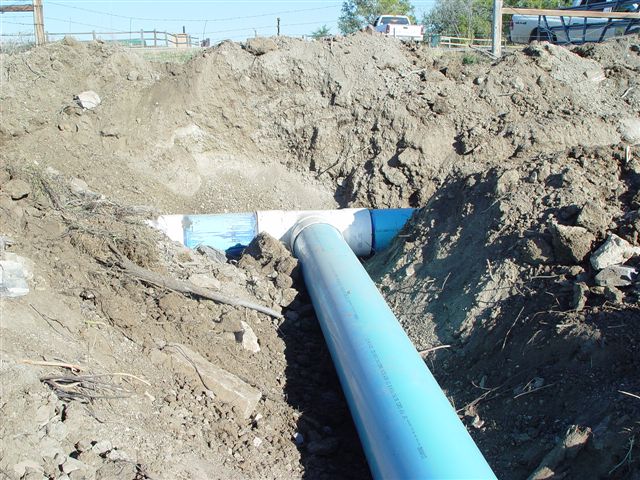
Las Vegas 8

Pipes from the new water delivery and pipeline system at Las Vegas NWR in Las Vegas, N.M. The refuge received more than $600,000 in Recovery Act funding to rehabilitate it water delivery and pipeline system and replace dilapidated wire fencing.